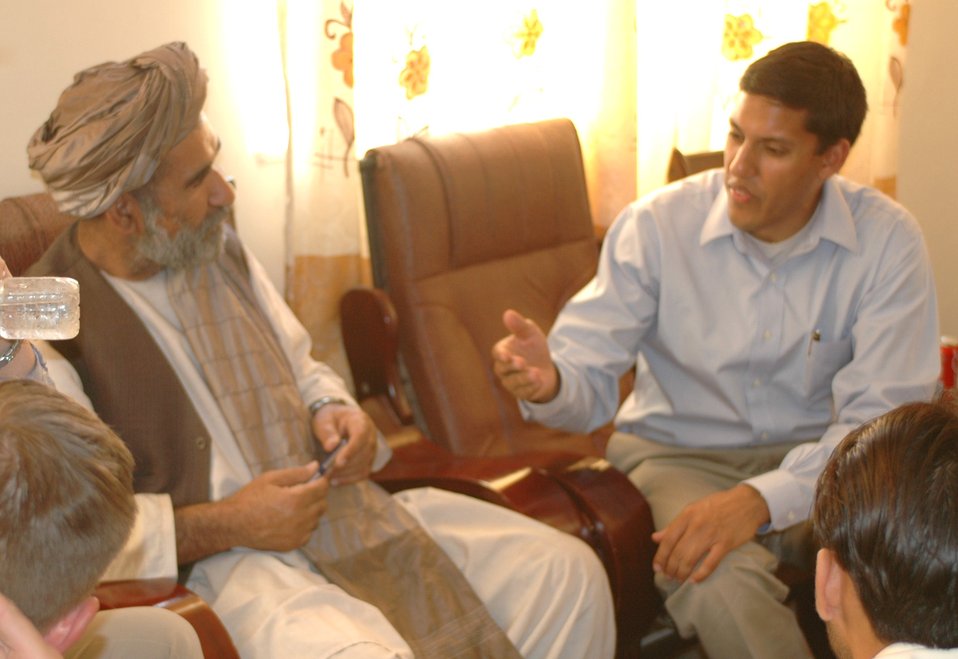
Dr Shah Visits Argandab April 10, 2010